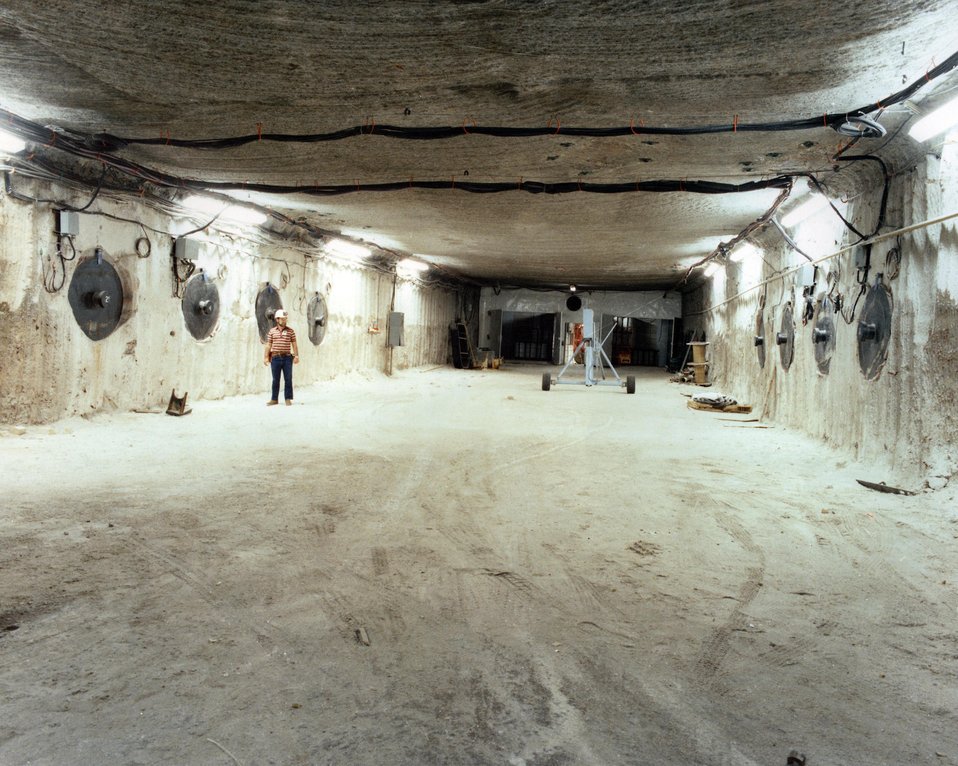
REMOTE HANDLING TRU HORIZONTAL EMPLACEMENT TEST ROOM (ROOM T).

THE WASTE ISOLATION PILOT PLANT IS A DOE RESEARCH AND DEVELOPMENT FACILITY FOR DEMONSTRATING THE SAFE DISPOSAL OF TRANSURANIC RADIOACTIVE WASTES. TEST SHAFTS HAVE BEEN DRILLED TO A DEPTH OF 2,100 FEET. THE SHAFTS, ONE 6 FEET IN DIAMETER AND THE OTHER 12 FEET IN DIAMETER, PROVIDE AN ENTRY PASSAGE AND VENTILATION TO THE UNDERGROUND SALT ROCK FORMATION THAT IS BEING TESTED TO DETERMINE ITS SUITABILITY FOR RADIOACTIVE WASTE STORAGE.